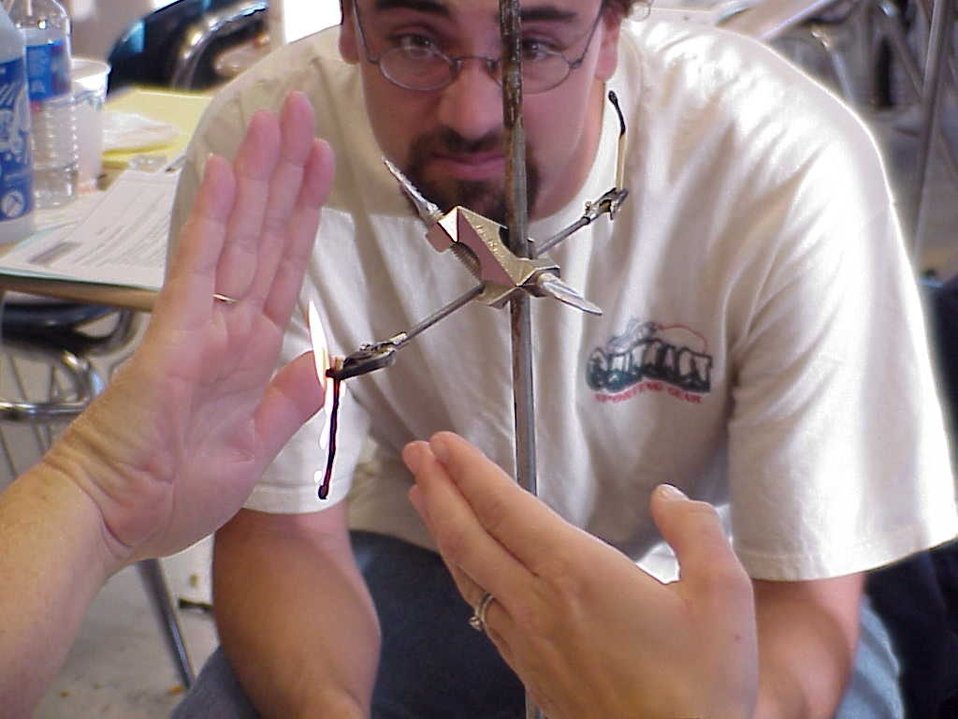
Environmental Education Fire Workshop Timberline High School Fall 2000